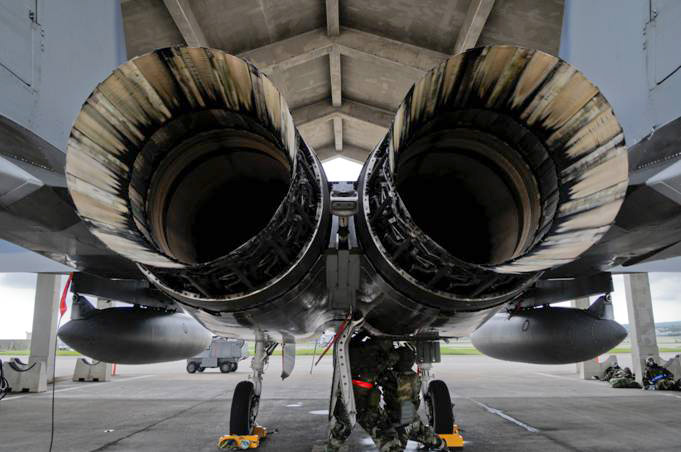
We're always ready

Senior Airman Tyler Disney (left) and Airman 1st Class Jesus Gotay-Rivera perform maintenance on an F-15 Eagle May 19, 2011, during an operational readiness exercise at Kadena Air Base, Japan. Airman Gotay-Rivera is assigned to the 67th Aircraft Maintenance Unit. Airman Disney is assigned to the 44th AMU.